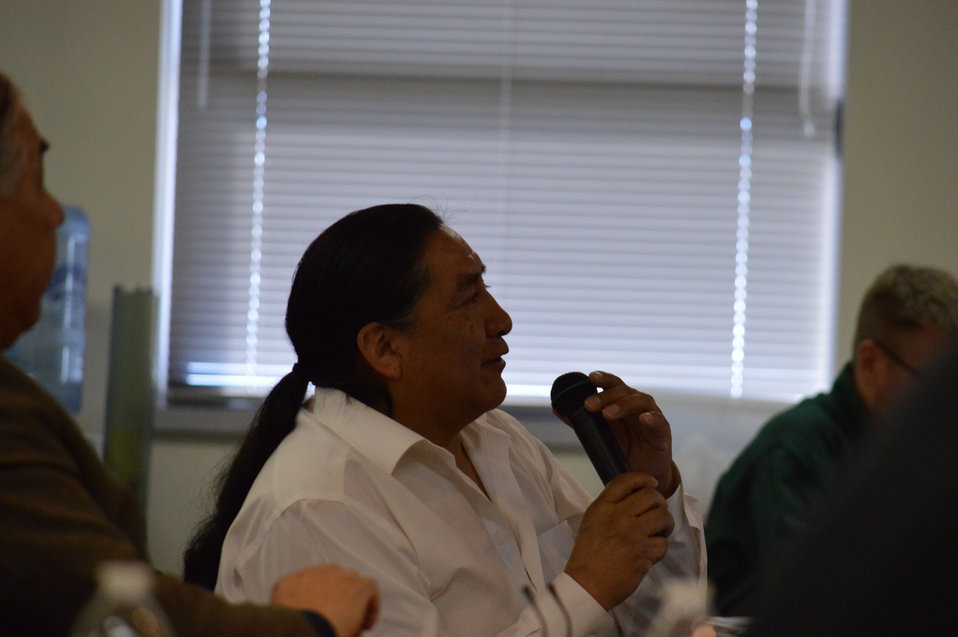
Eagle Summit III

Questions and comments are raised at the Eagle Summit III in Denver, Colorado on March 20, 2014 at the Rocky Mountain Arsenal National Wildlife Refuge.